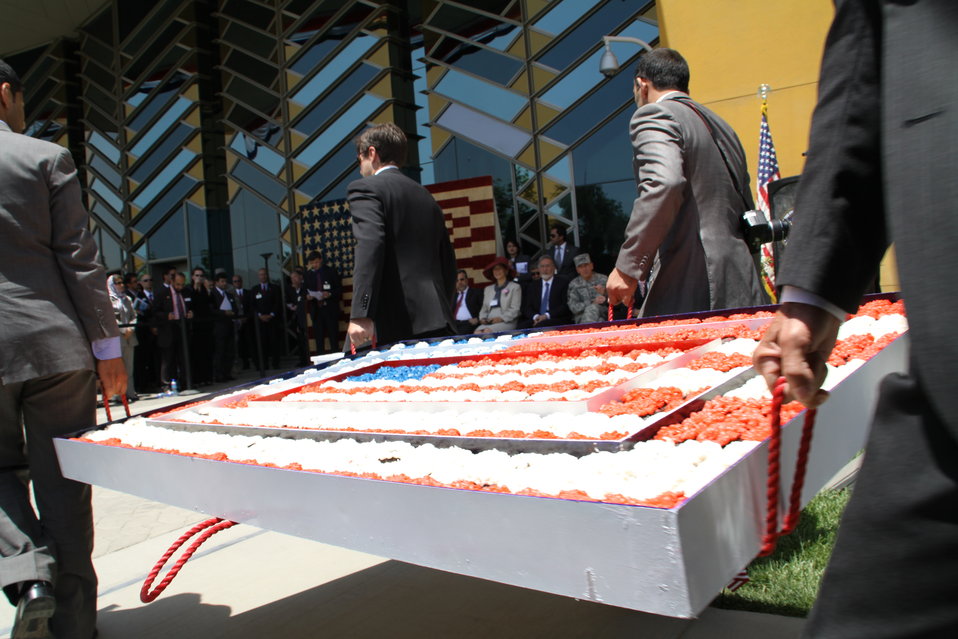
Kabul Official July 4th Celebration